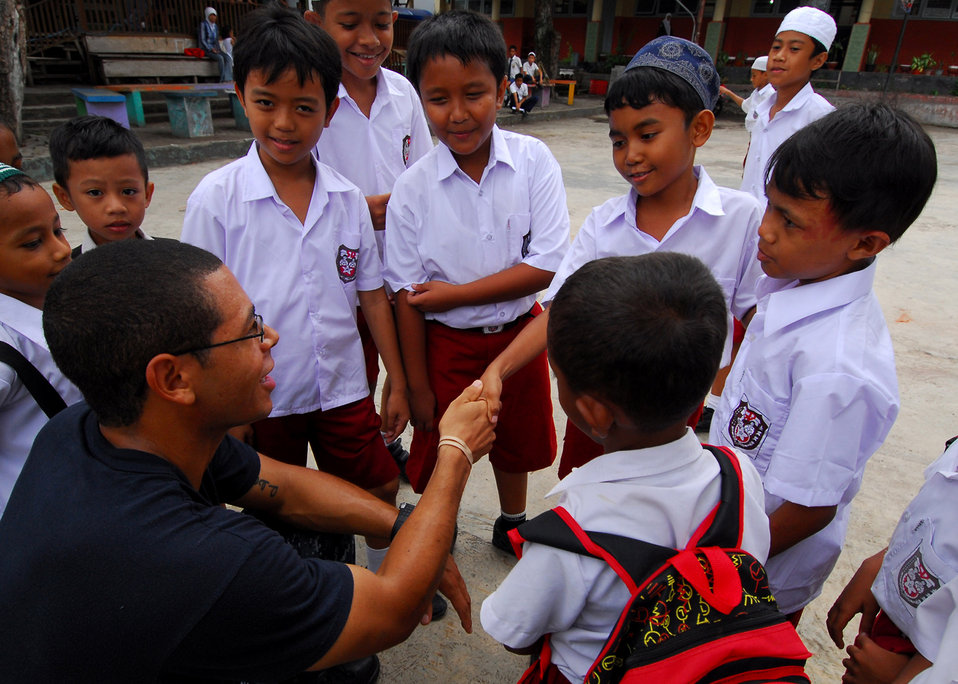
Mass Communication Specialist 3rd Class Matthew Jackson talks with a group of children during a community service event at Kalumpang Kota Orphanage and School in Ternate, Indonesia, on July 19, 2010. The Military Sealift Command hospital ship USNS Mercy (T-AH 19) is in the North Maluku Islands conducting Pacific Partnership 2010, the fifth in a series of annual U.S. Pacific Fleet endeavors conducted in Indonesia as a disaster relief exercise aimed at strengthening regional partnerships.